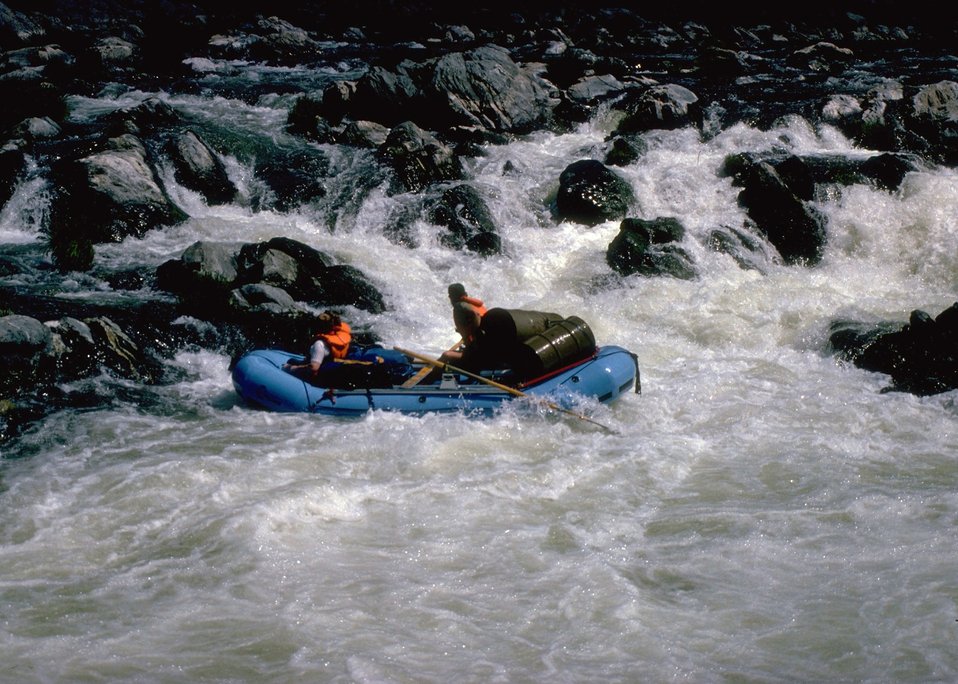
Rafting through the whitewater of the Middle Chute of the Rainie River.